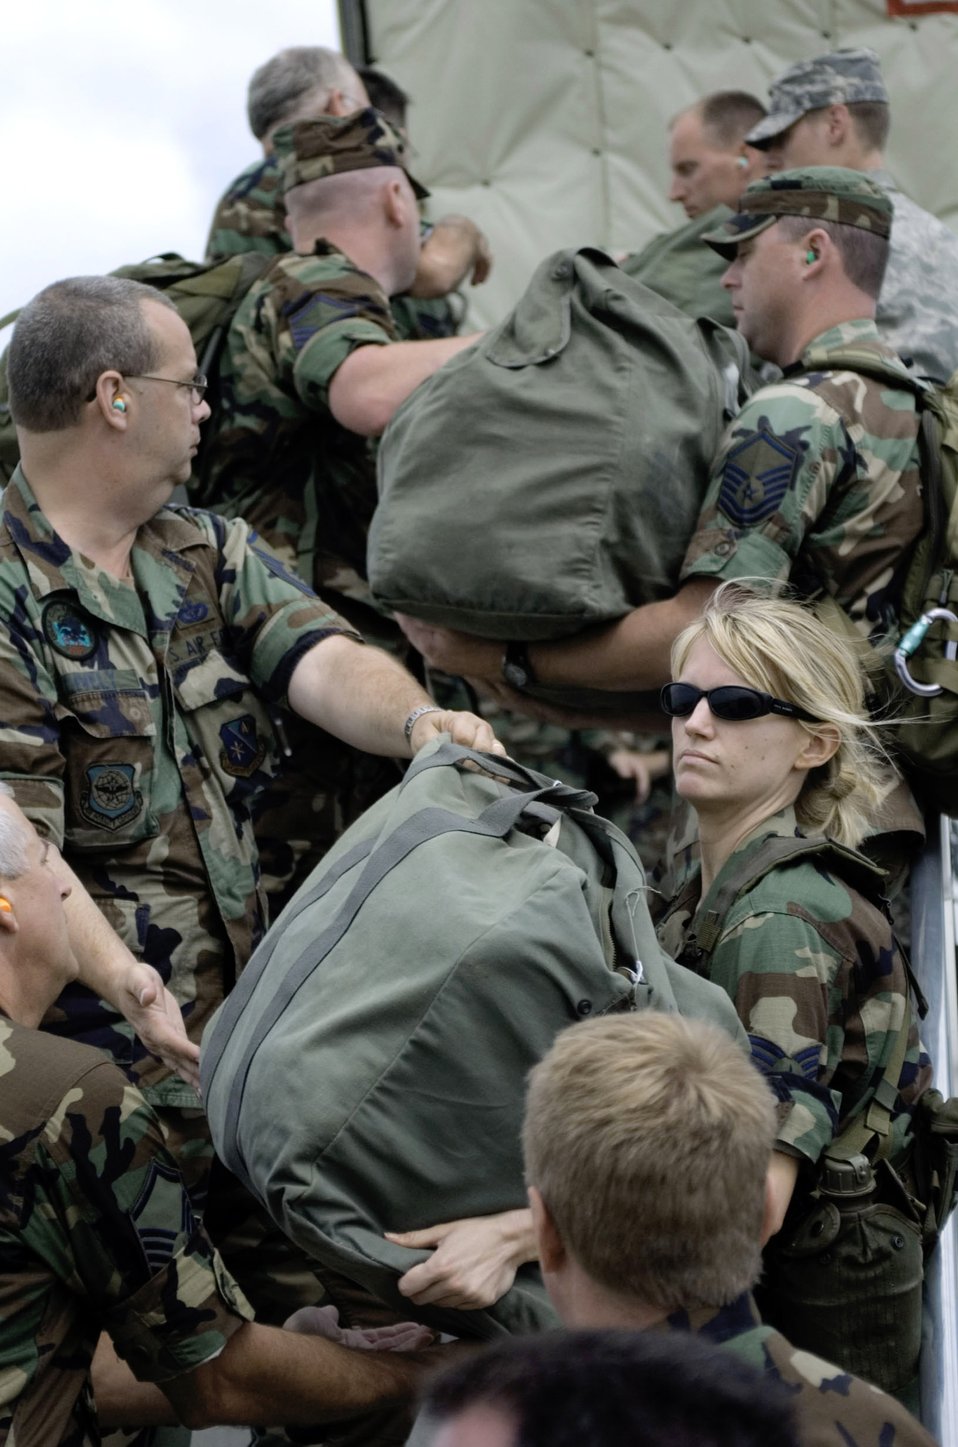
Air National Guard shores up as flood recedes

Airmen from the 185th Air Refueling Wing unload a KC-135 Stratotanker on the Eastern Iowa Airport flightline in Cedar Springs, Iowa, June 15. More than 150 Airmen arrived in Cedar Rapids to help secure and recover areas that were affected by flood waters. The 185th ARW is located in Sioux City, Iowa.